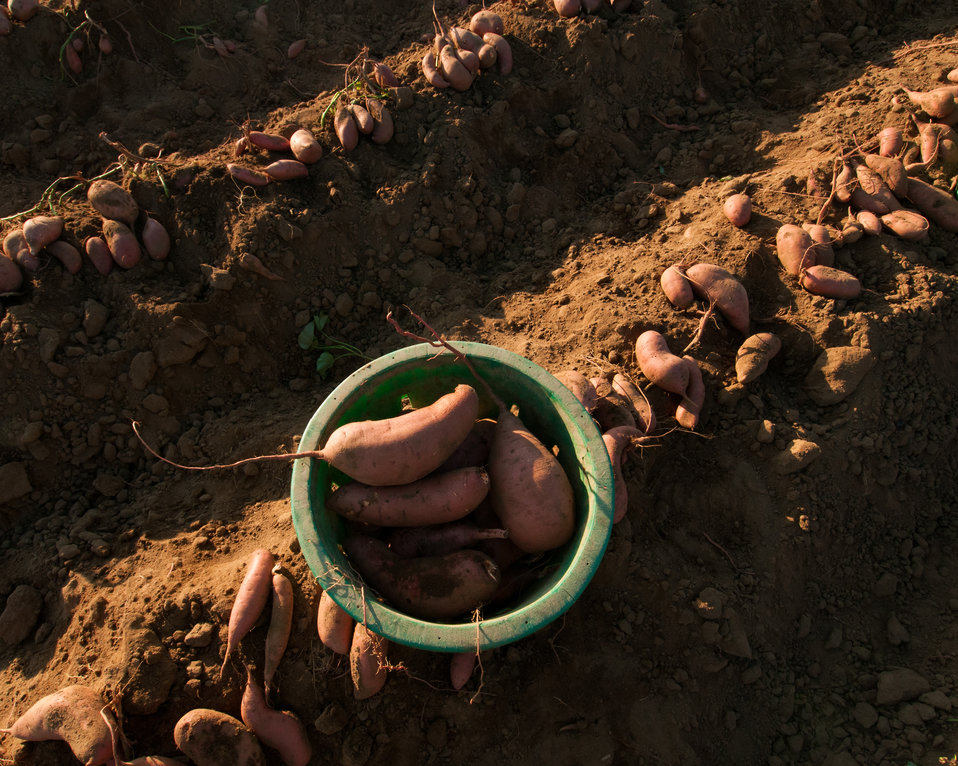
Large sweet potatoes are ploughed up for migrant workers to pick and sort according to size at Kirby Farms in Mechanicsville, VA on Sep. 20, 2013. Kirby Farms is a third-generation family farm that covers 500 acres, and generates produce and grains on a year-around operation. Please see the photoset description for more information about this farm operation.USDA photo by Lance Cheung.